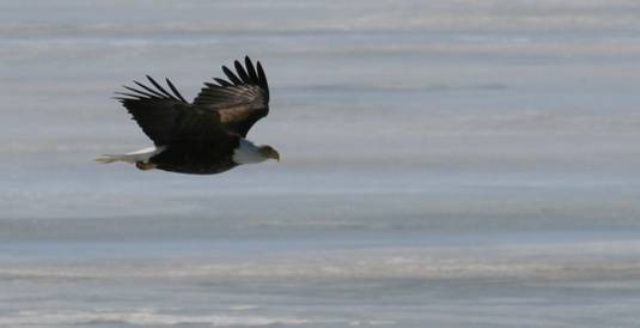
Bald Eagle

In the late 20th century the Bald Eagle was on the brink of extirpation in the continental United States. Populations recovered and stabilized, so the species was removed from the U.S. federal government's list of endangered species and transferred to the list of threatened species on July 12, 1995. It was subsequently removed from the List of Endangered and Threatened Wildlife in the Lower 48 States on June 28, 2007.